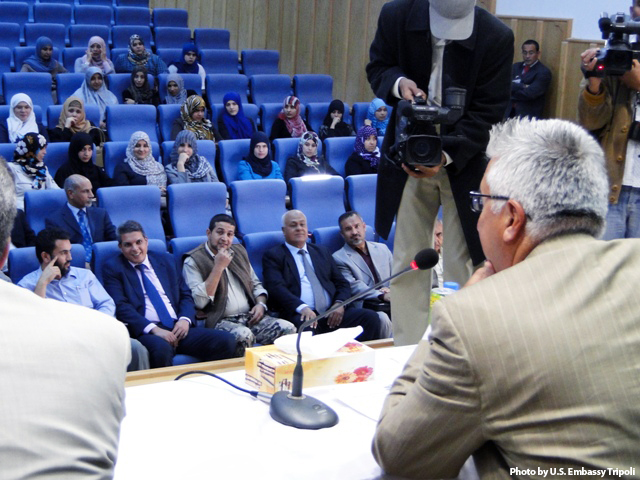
Misurata University Students Ask Ambassador Cretz Questions

Misurata University students exercise their new-found freedom of expression and put questions to U.S. Ambassador to Libya in Misurata, Libya, on November 26, 2011.